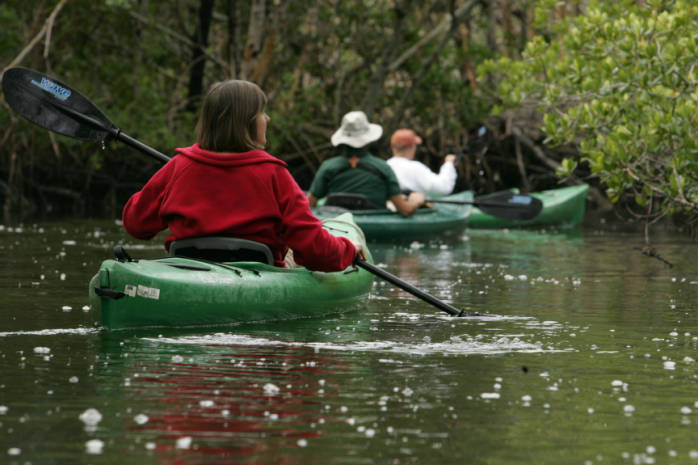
Water level